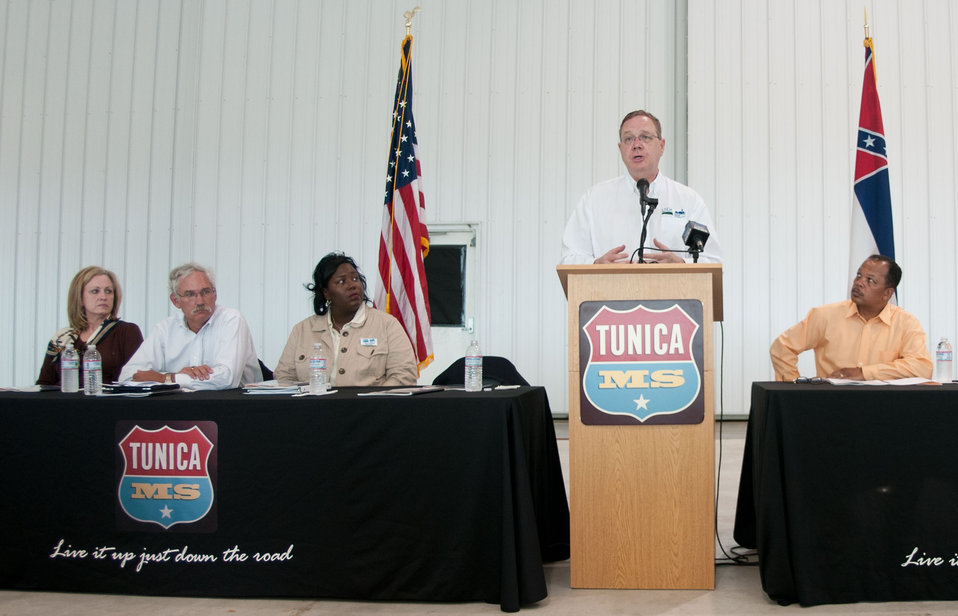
U.S. Department of Agriculture Undersecretary for Rural Development Dallas Tonsager addresses farmers at an outreach event at Tunica Airport in Mississippi on Thursday, May 19, 2011. With him is Acting Under Secretary Farm and Foreign Agriculture Service Michael Scuse (second from left; Rural Development State Director for Mississippi Trina N. George (third from left) and Farm Service Agency District 1 Director Judy Rocconi (left).